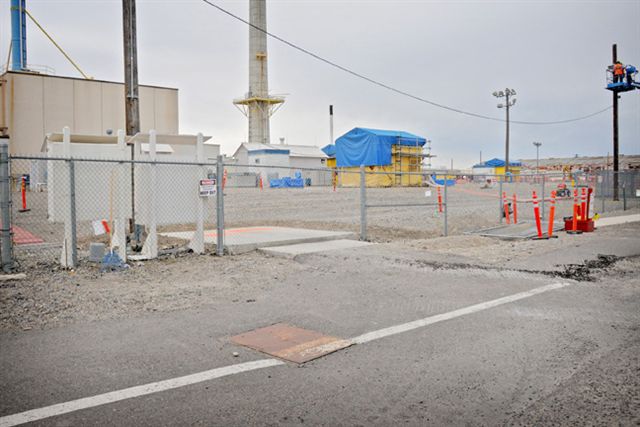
RAN DD INTEC S104 CPP-1672 COMPLETE 072610 P6554-46 A